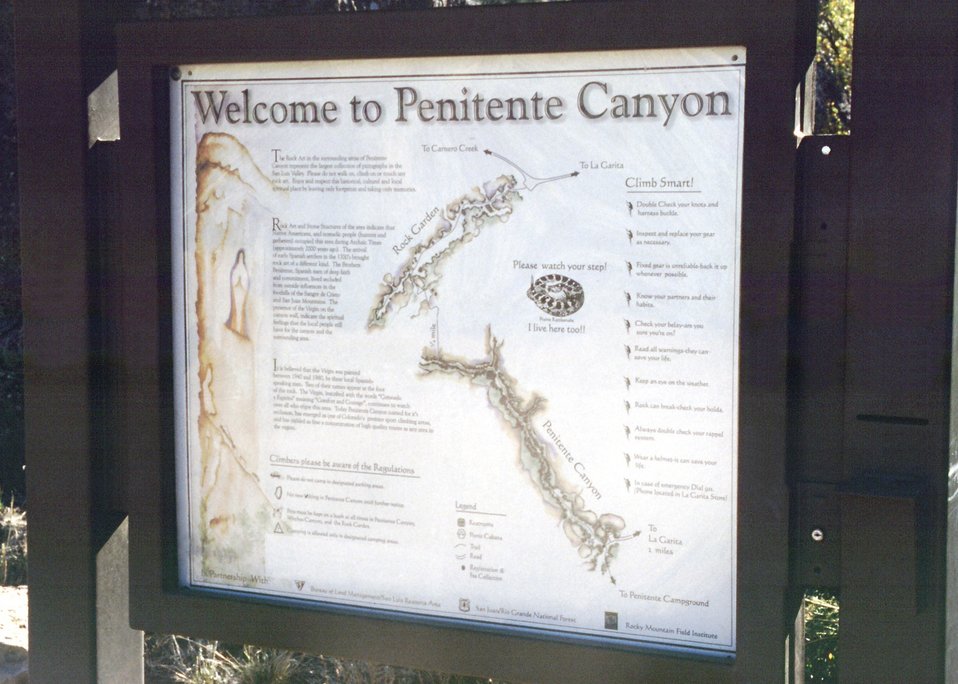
Penitente Canyon Sign